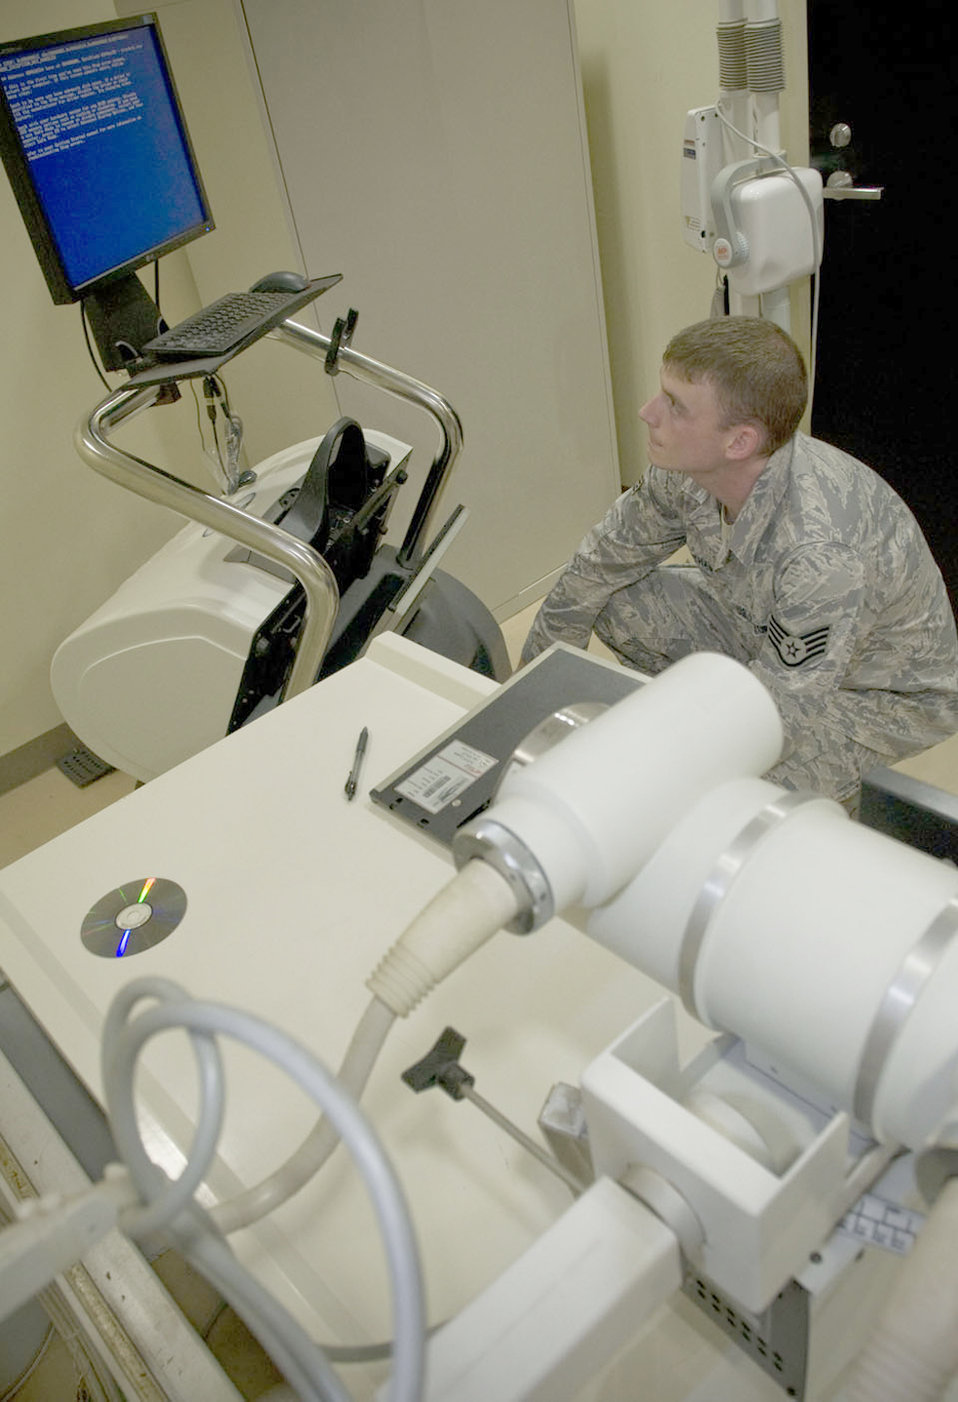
BMETs deliver

Staff Sgt. Michael Southam reinstalls computer software on an X-ray film digitizer Sept. 21, 2010, at the veterinary clinic at Misawa Air Base, Japan. Sergeant Southam is a 35th Medical Support Squadron biomedical equipment technician.